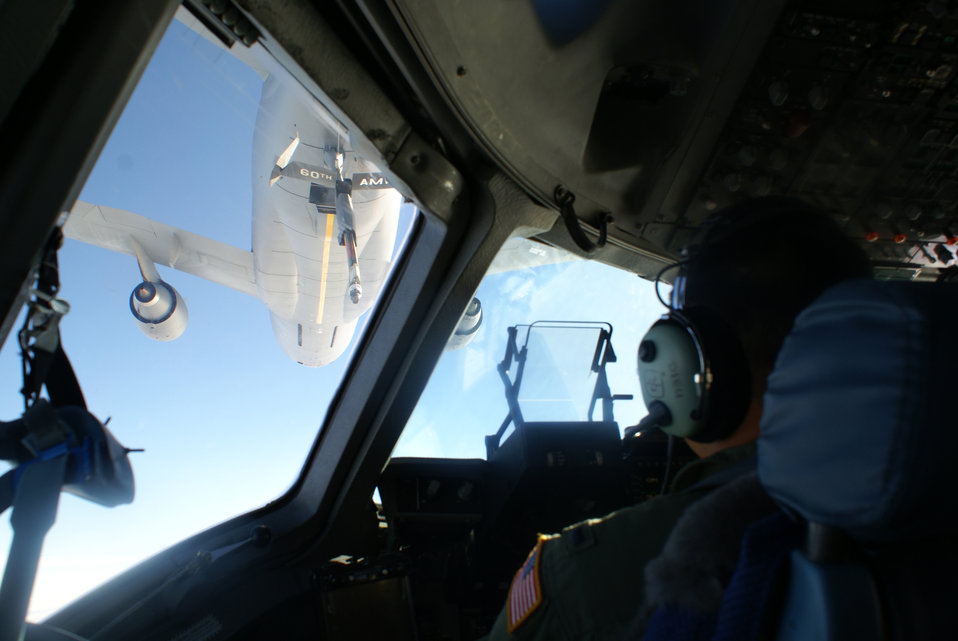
relief efforts

First Lt. Andre Dieu, a C-17 Globemaster III pilot with the 7th Airlift Squadron at McChord Air Force Base, Wash., prepares for an air refueling from a KC-135 Stratotanker from Travis AFB, Calif., over the Pacific Ocean Oct. 1, 2009. The C-17 was en route from McChord to Pago Pago, American Samoa, supporting humanitarian relief efforts for the region. On board was a team of nine Federal Emergency Management Agency officials and 17,000 pounds of communications equipment.